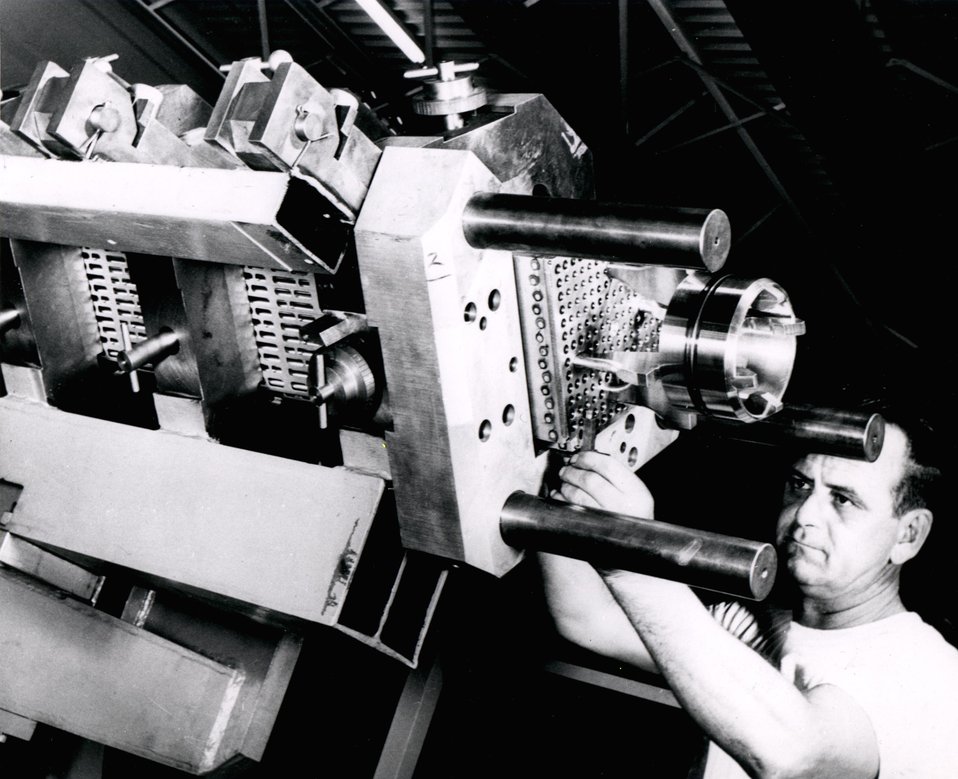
Fuel Element Fabrication: Finished fuel pellets are loaded into cladding tubes which are end capped and assembled into an enclosure. c. 1964